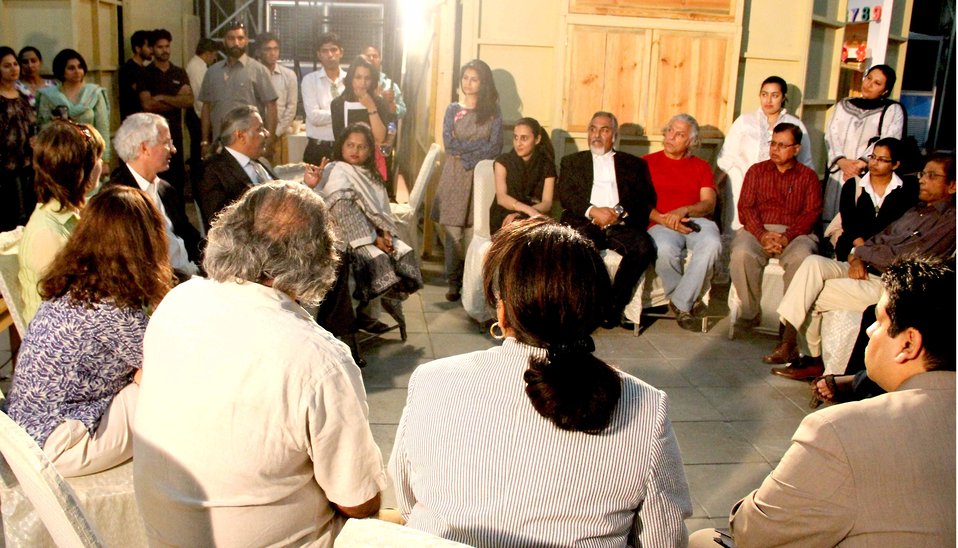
U.S. Ambassador’s Visit to Sim Sim Hamara Highlights U.S. Commitment to Improved Children’s Education in Pakistan at Lahore on 28 April, 2012

US Officials and Sim Sim Production team